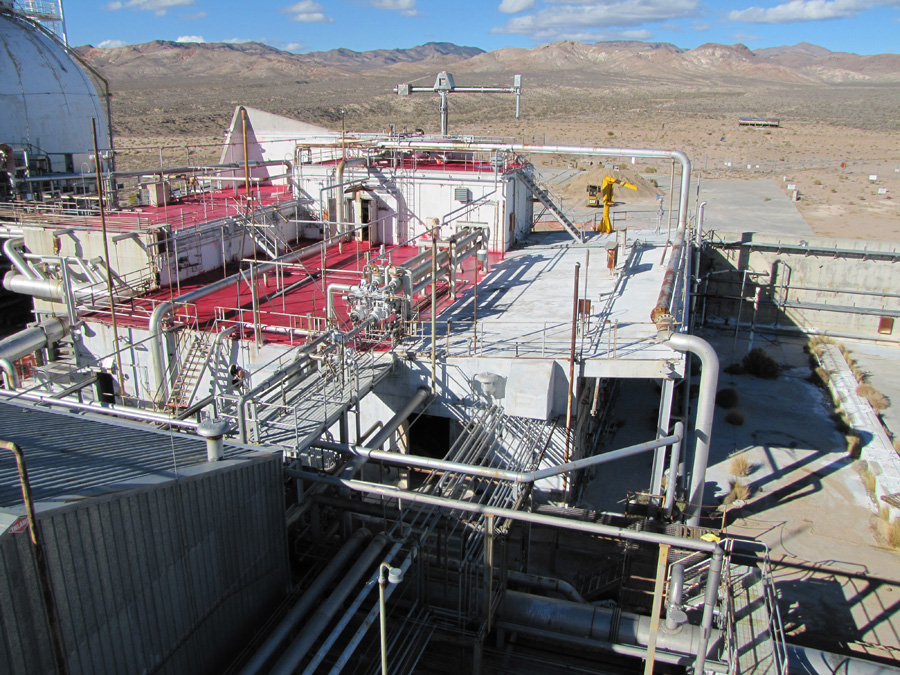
More Recycling Means Less Waste for DOE Complex

Rocket engines were tested in separate structures called test cells. Test Cell C, seen here before demolition, was one of three test cells located in the Nuclear Rocket Development Station that ceased operations in 1973. Lead recovered during demolition had been an integral part of the facility’s construction, serving as a primary material for radiation shielding.

In September 2011, a total of 33,000 pounds of lead was shipped from the NNSS to the recycling company, Toxco Inc. Toxco, which received the lead in the form of bricks, battery plates, and counterweights, plans to use the material to make protective shielding for government and commercial nuclear industrial operations.